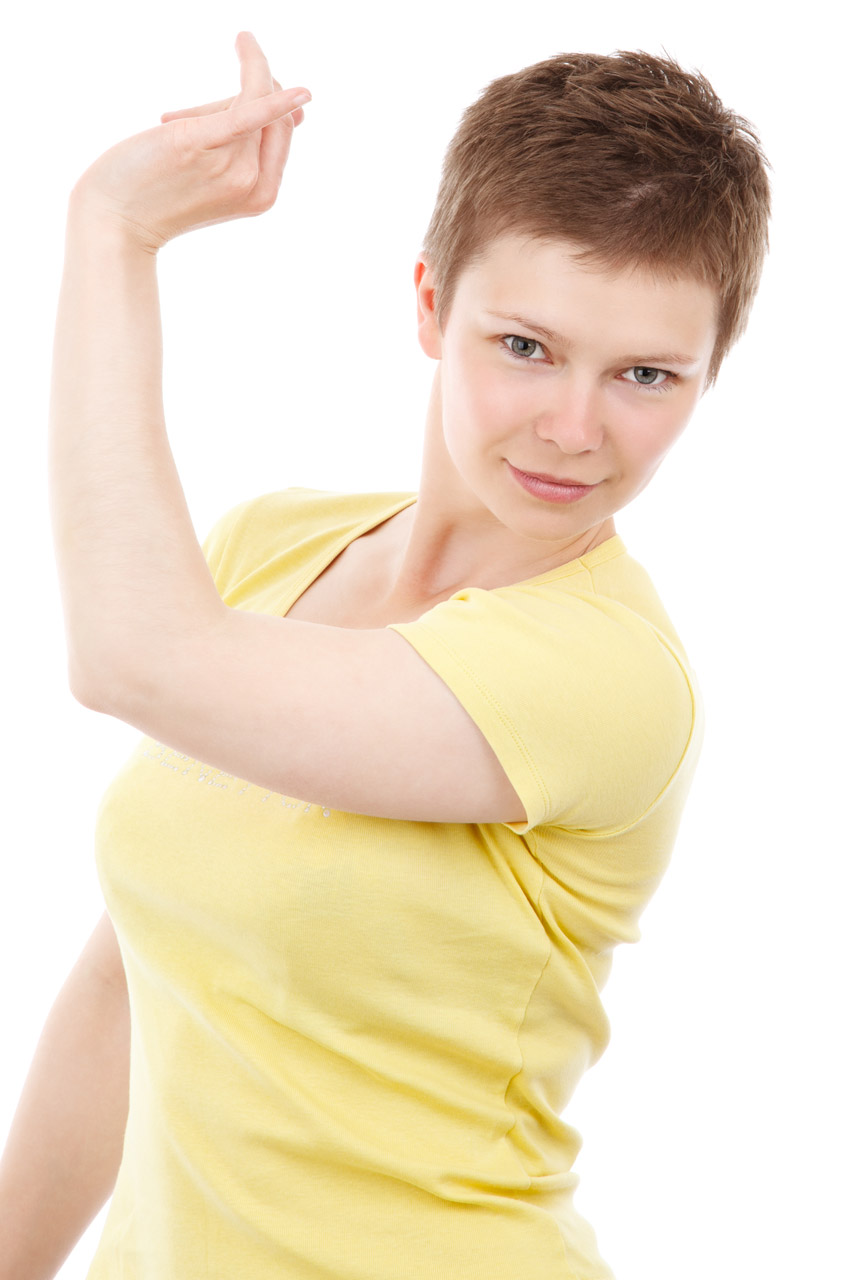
Woman in a dancing pose

Young woman dancing isolated in yellow t-shirt on white background.